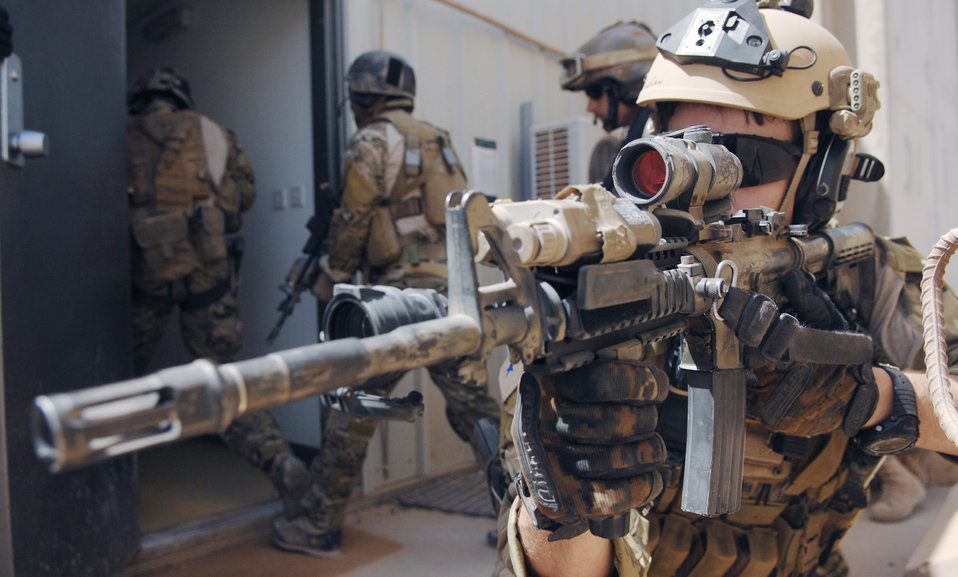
Pararescuemen train at Joint Base Balad

Senior Airman Jeffrey Larsen scans his sector as the rest of his element enters a building during a training exercise Aug. 2 at Joint Base Balad. Air Force pararescuemen are the only servicemembers in the Department of Defense trained for personnel recovery operations as a primary mission. Airman Larsen is a pararescueman with the 64th Expeditionary Rescue Squadron.